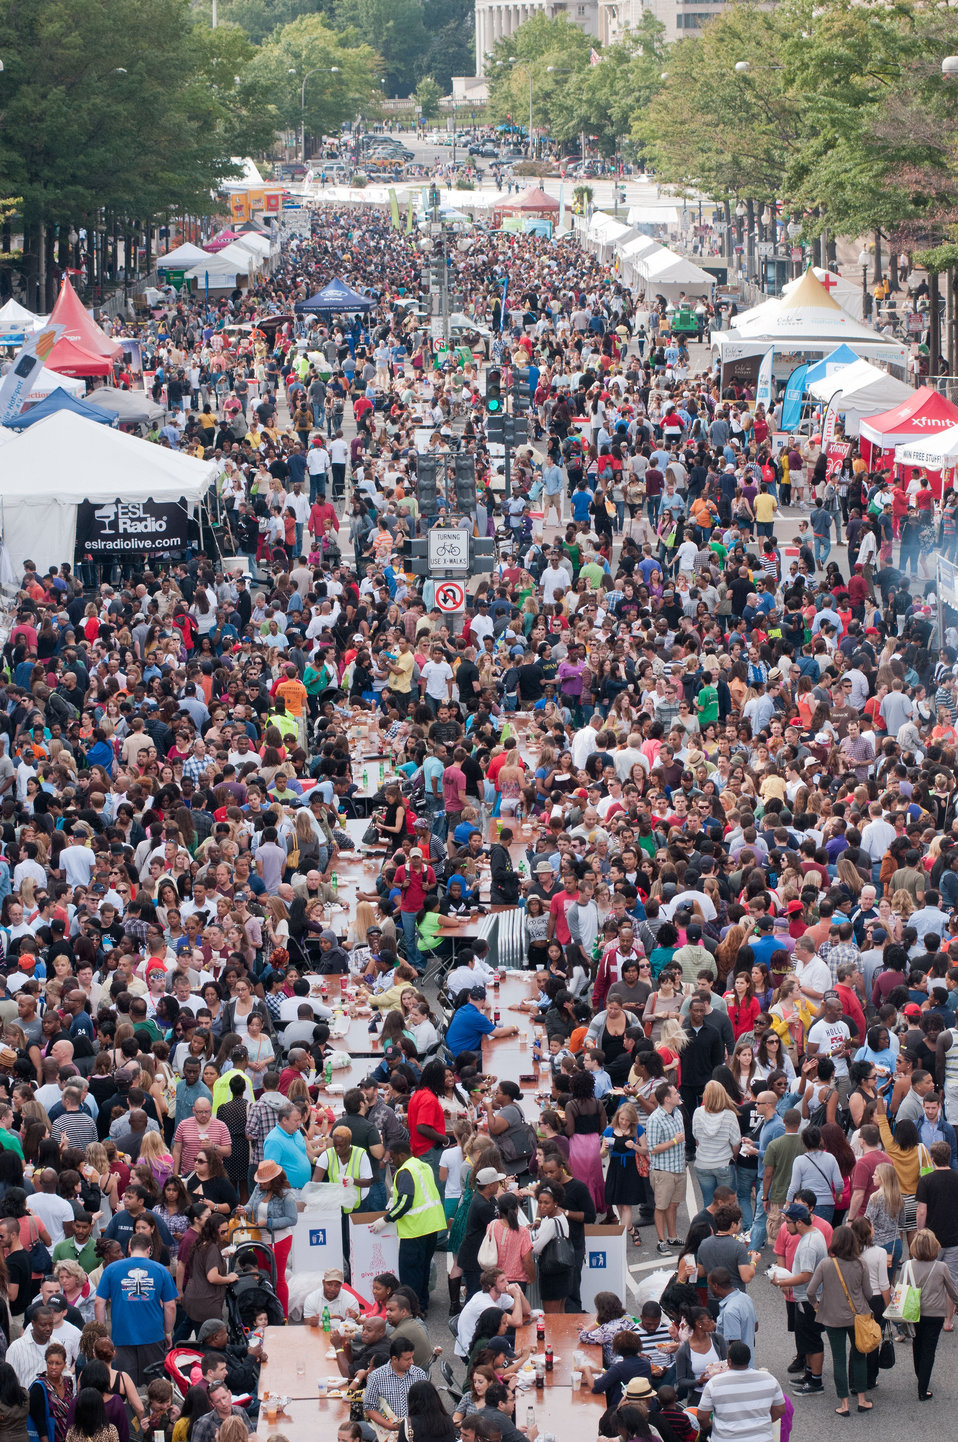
The Taste of D.C., event highlights more than 70 eateries, 30 specialty beer providers, the United Service Organization (USO) Metropolitan Washington, and live bands. It is anticipated that more than 500,000 people will attend over the course of the three-day event, which extends from the White House to the Capitol, along Pennsylvania Ave. in Washington D.C. on Saturday, October 6, 2012. Agriculture Food Safety and Inspection Service specialists present talks and cooking demonstrations. Agriculture’s mobile Discovery Zone is on hand to educate children and parents about the four main principals of food safety – clean, separate, cook and chill.